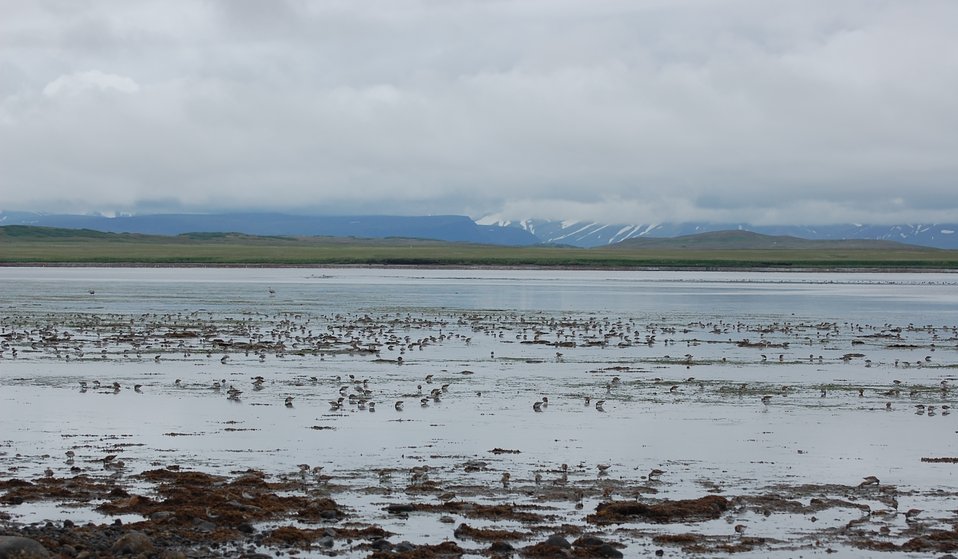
Western sandpipers

Kinzarof Lagoon, Izembek National Wildlife Refuge
Photo by Kristine Sowl,
USFWS, Public Domain